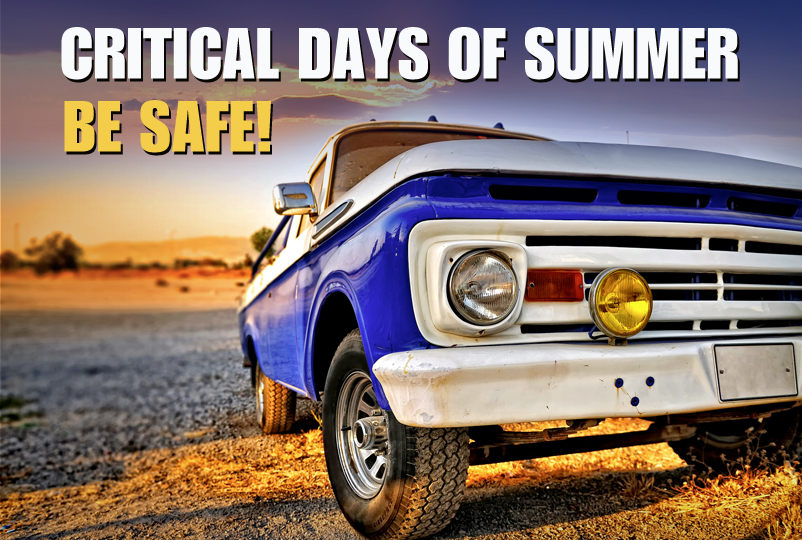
Critical Days of Summer